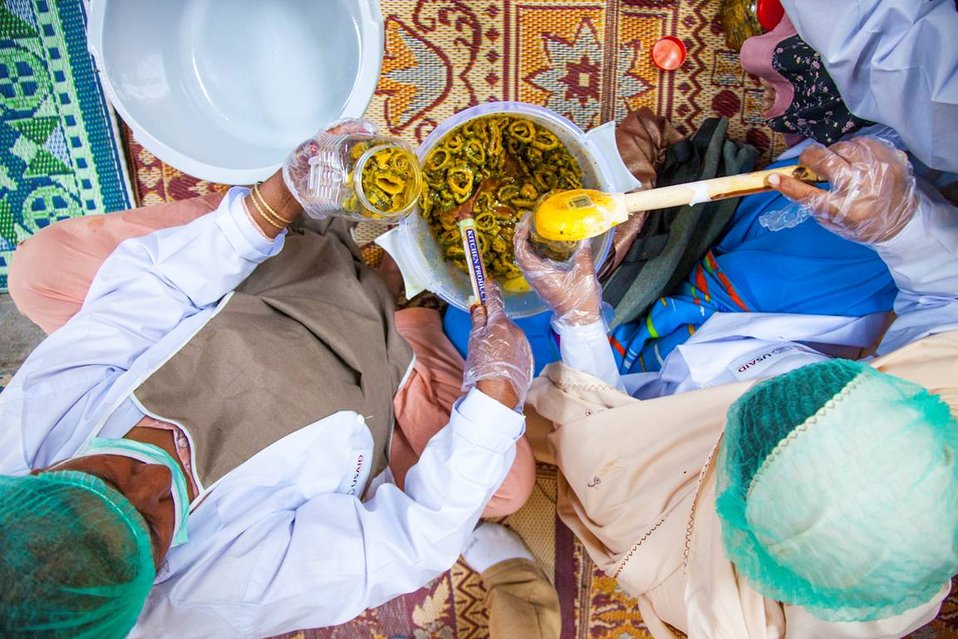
USAID's Agribusiness Project Women FEG for Food Processing - Pickle Production at Village Jabbi

The women were provided and taught how to use standardized recipes and packaging, so that pickles from the three villages can be sold under the same brand.
www.usaid.gov/pk/db/sectors/growth/project 750.html